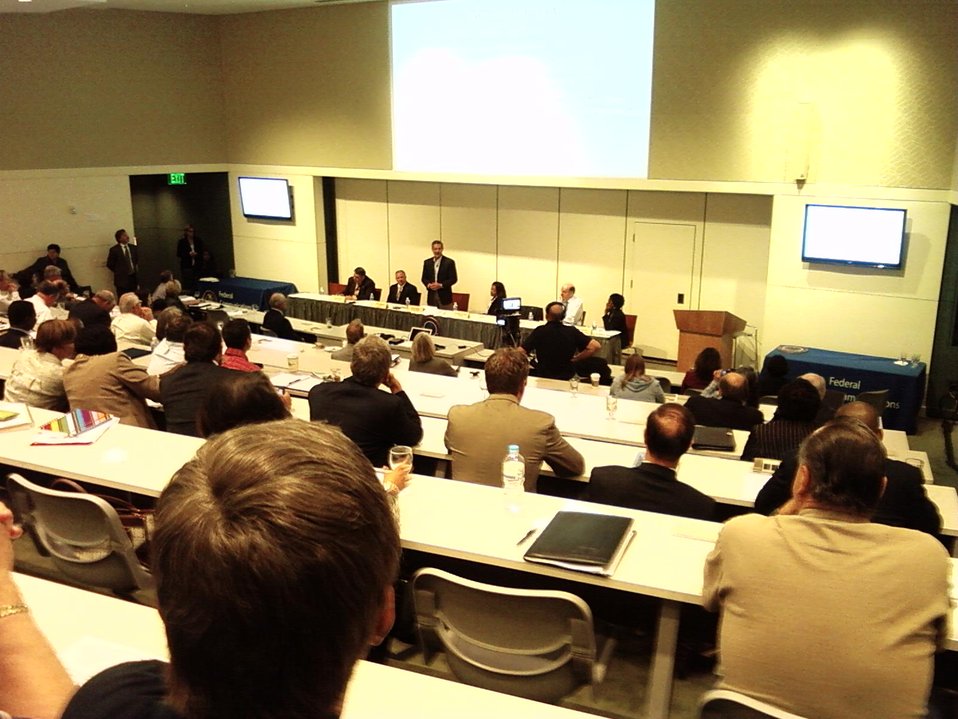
Field Hearing on Broadband Adoption 10-6-09